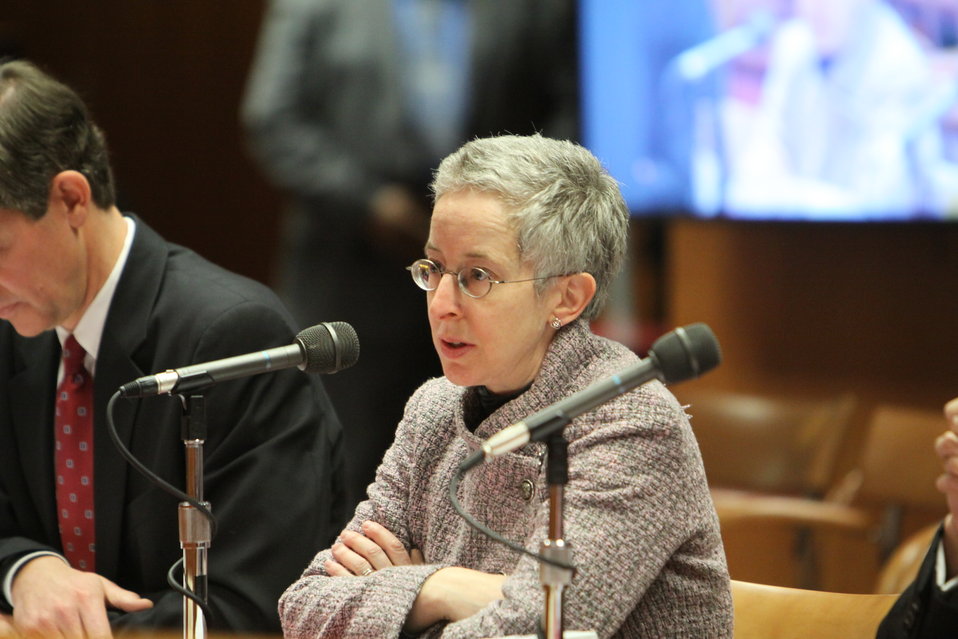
Ruth Milkman, Chief of the Wireless Telecommunications Bureau